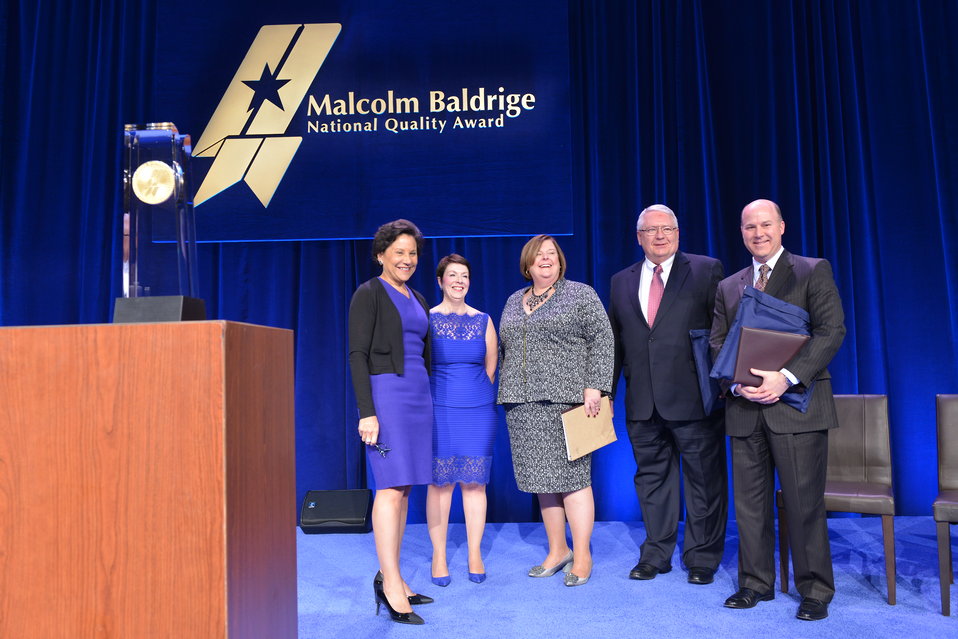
Secretary Penny Pritzker and 2013 Baldrige Award Recipients, 2013 Baldrige Award Ceremony, April 6, 2014

(from left) Secretary of Commerce Penny Pritzker; Janet Wagner, CEO, Sutter Davis Hospital; JoAnn Sternke, Superintendent, Pewaukee School District; Larry Dux, Board of Education Clerk, Pewaukee School District; and James Conforti, President, Sutter Health Sacramento Sierra Region; 2013 Baldrige Award Ceremony, April 6, 2014